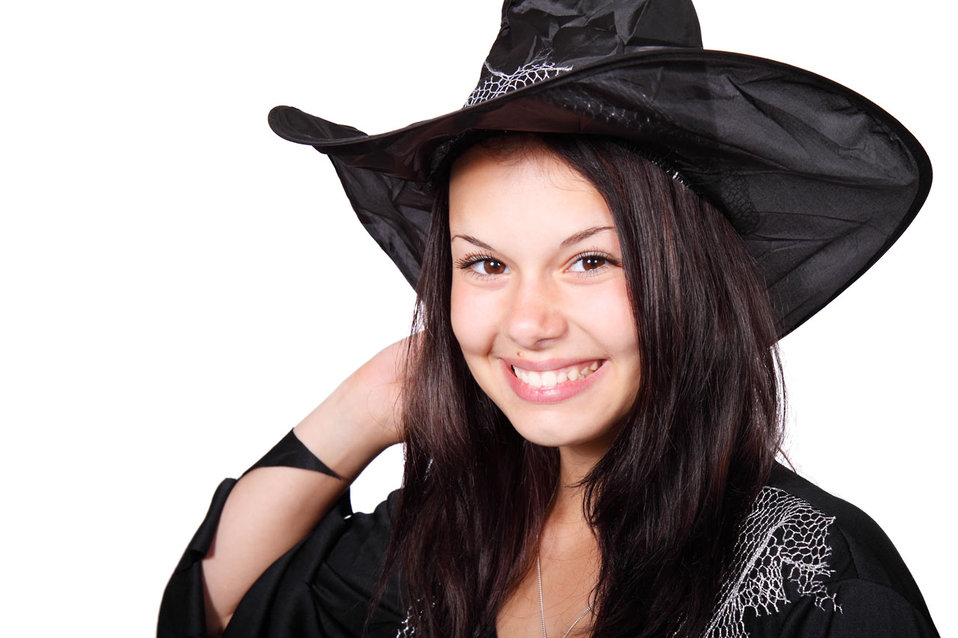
Smiling witch

Cute halloween witch smiling.